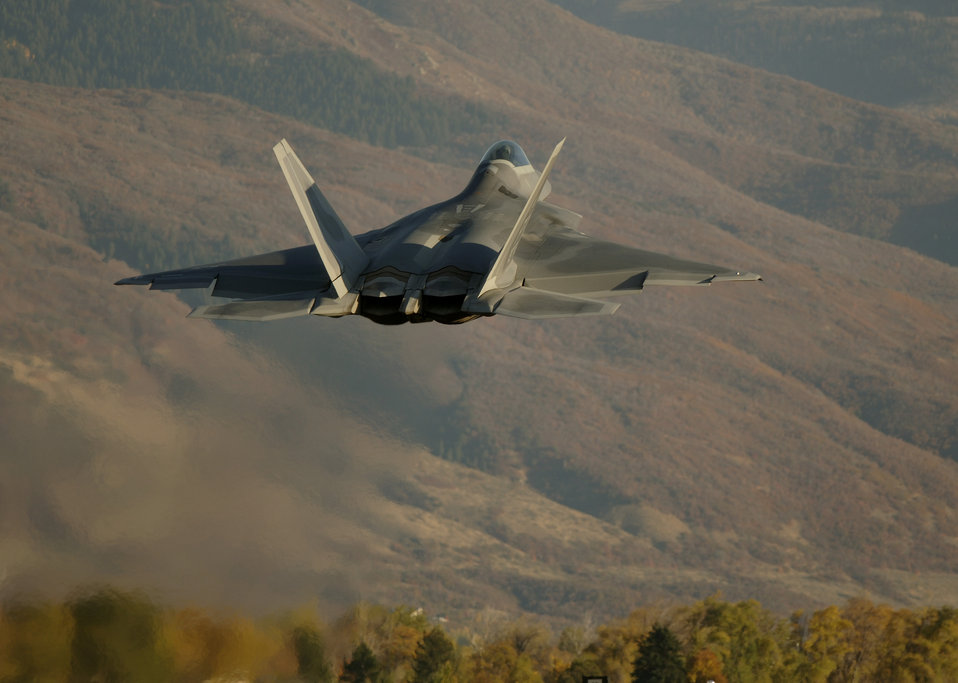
Combat Hammer

HILL AIR FORCE BASE, Utah -- Maj. Michael Shower lifts his F/A-22 Raptor from here for a late Combat Hammer mission Oct. 17. The major flies with the 27th Fighter Squadron, the Air Force's first operational F/A-22 squadron, at Langley Air Force Base, Va. The deployment has a twofold goal: complete a deployment and to generate a combat-effective sortie rate away while deployed.